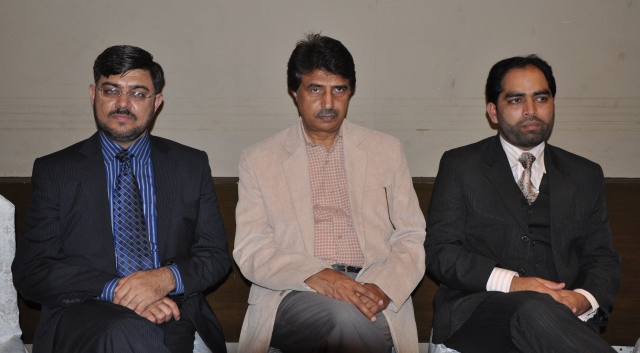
Workshop Participants